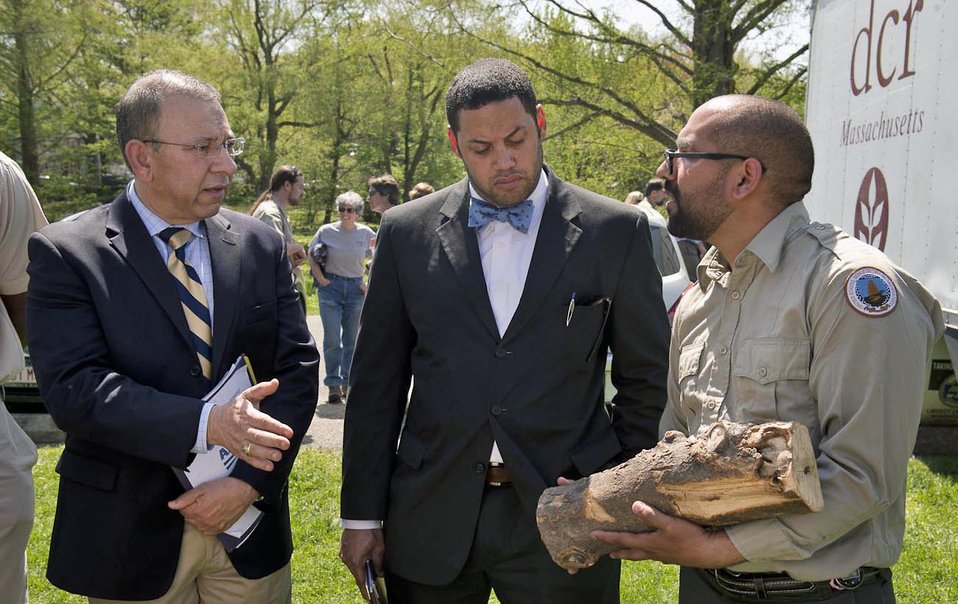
(L to R) U.S. Department of Agriculture (USDA) Animal Plant Health Inspection Service (APHIS) Plant Protection and Quarantine (PPQ) Deputy Administrator Osama El-Lissy, USDA Marketing and Regulatory Programs (MRP) Deputy Under Secretary Gary Woordward, USDA APHIS employee Rafael Negron attend the declaration event for the eradication of Asian Longhorned Beetle (ALB) in Boston, MA on May 12, 2014. Federal, state and local officials joined together to announce that ALB has been eradicated from the Boston regulated area. Boston joins five other areas to declared eradication of ALB in the U.S.